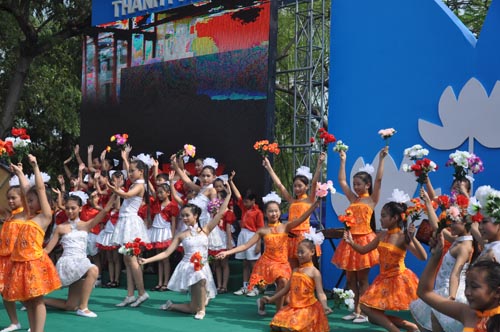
Children perform during Hanoi's 1,000th anniversary celebrations.